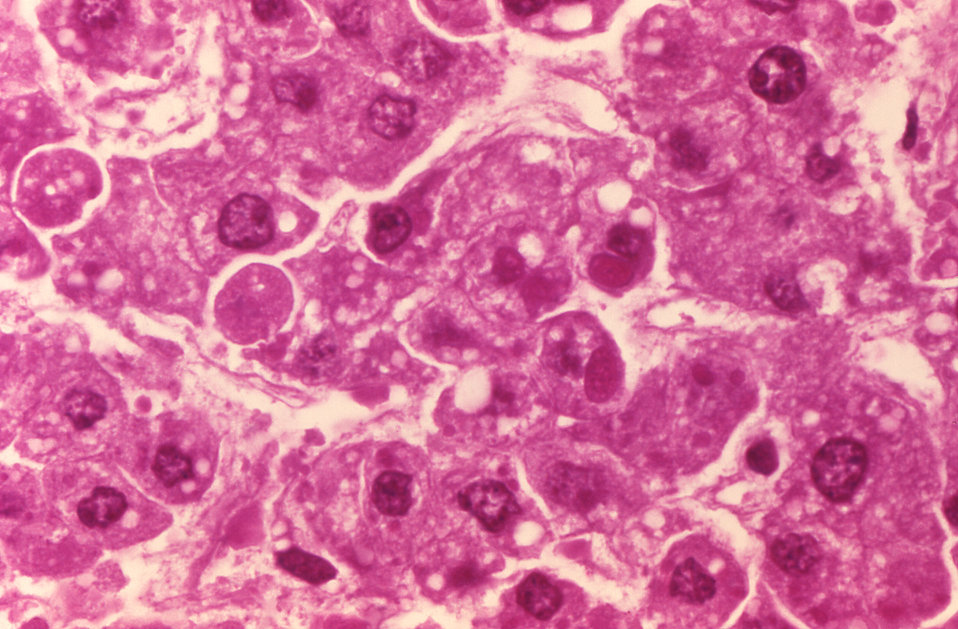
This micrograph reveals human hepatocytes infected with the Ebola virus, the cause of Ebola hemorrhagic fever.